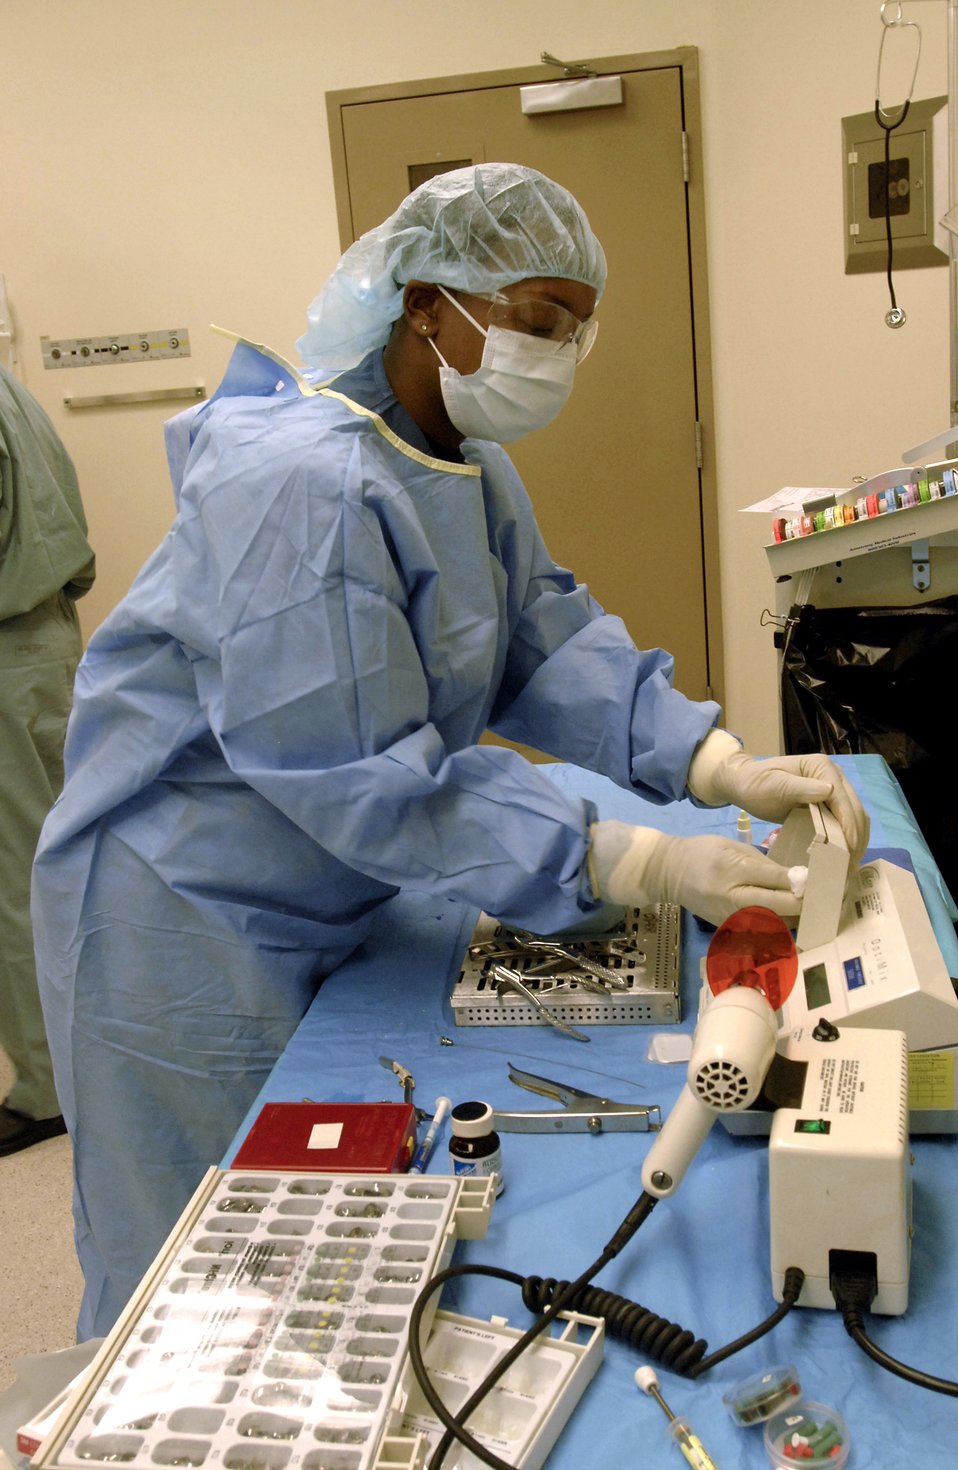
Open wide

Staff Sgt Tiawanna West sorts dental instruments and prepares them for sterilization after assisting in a dental rehabilitation surgery Jan. 29 Aviano Air Base, Italy. Sergeant West is a surgery technician with the 31st Dental Squadron. The 31st DS provides services for more than 10,000 members and their families.